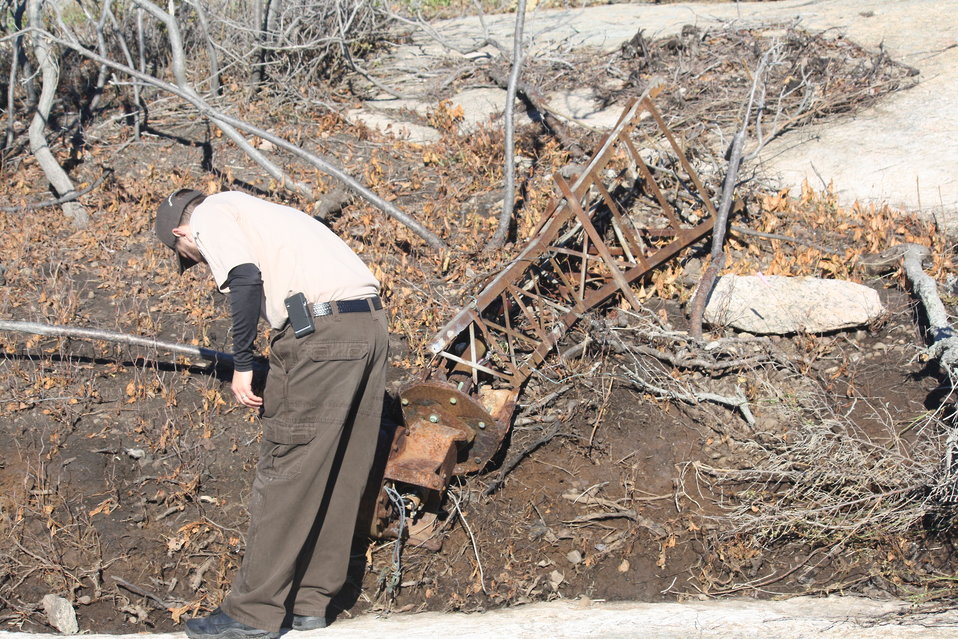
Damage at Stewart B. McKinney National Wildlife Refuge (CT)

Visitor Services Manager Shaun Roche assesses damage to Outer Island. The storm surge washed debris onto the island.